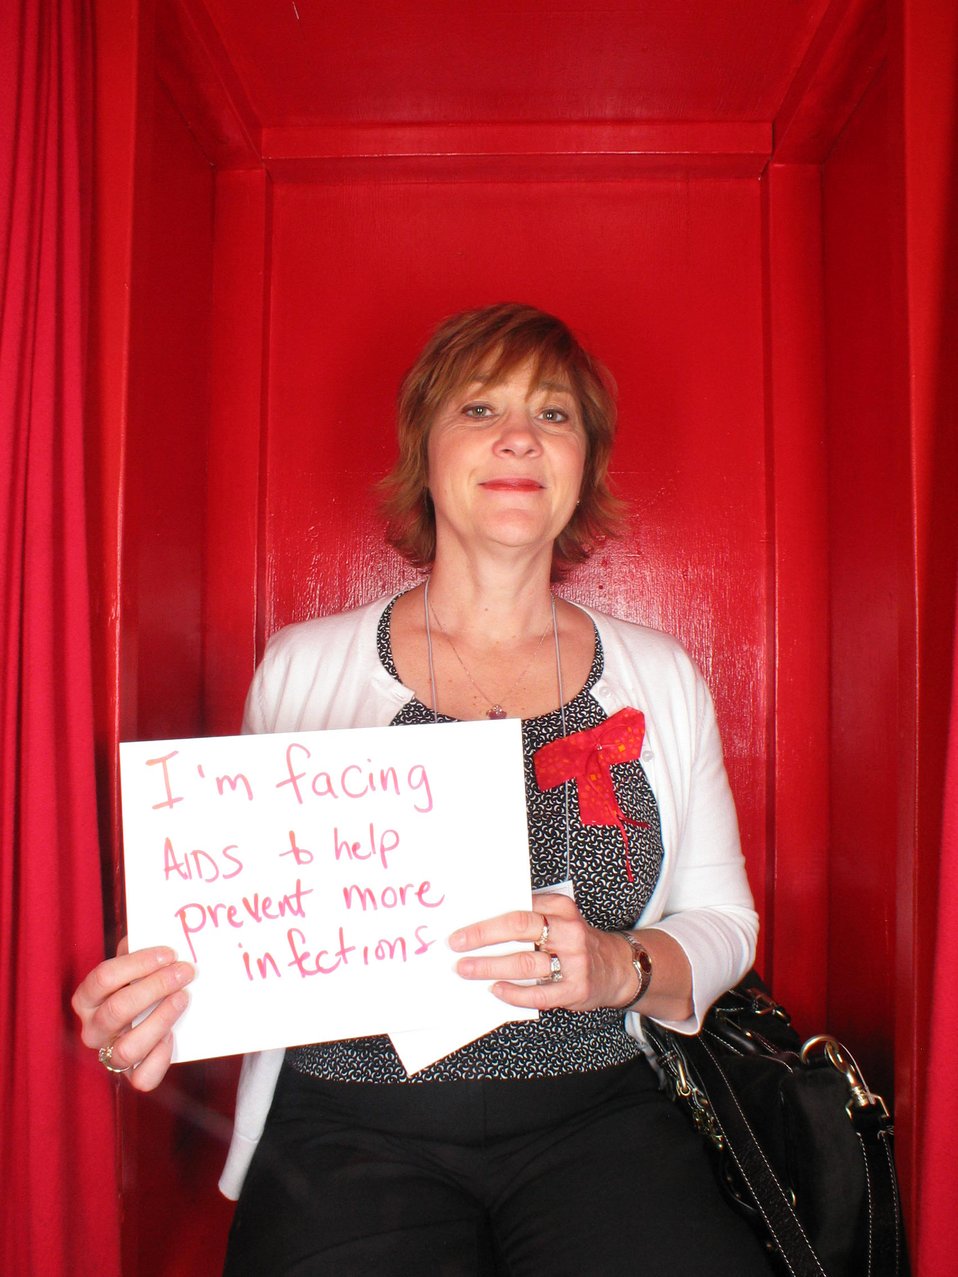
I am Facing AIDS to help prevent more infections.